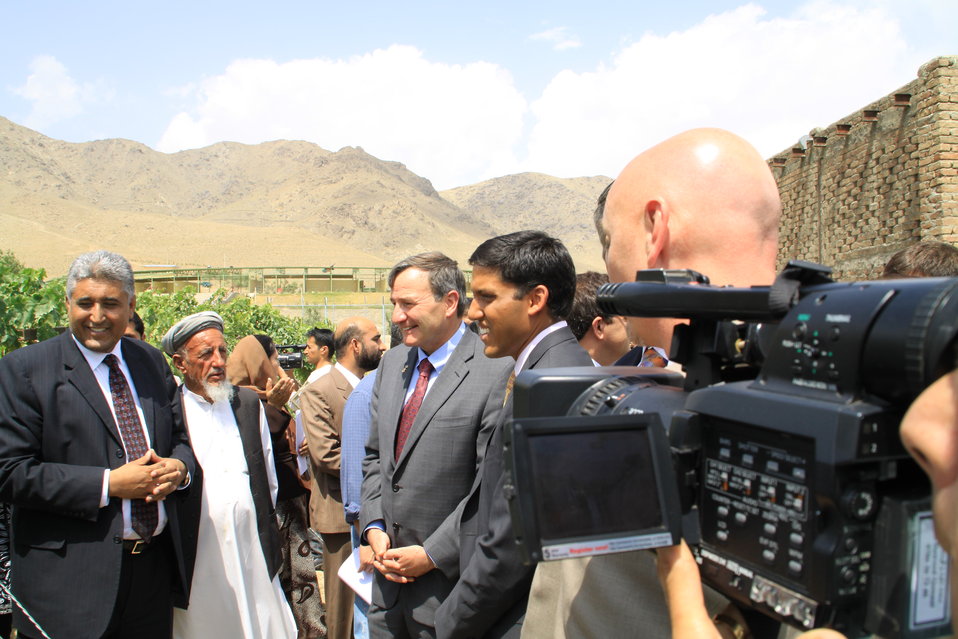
Badam Bagh Farm